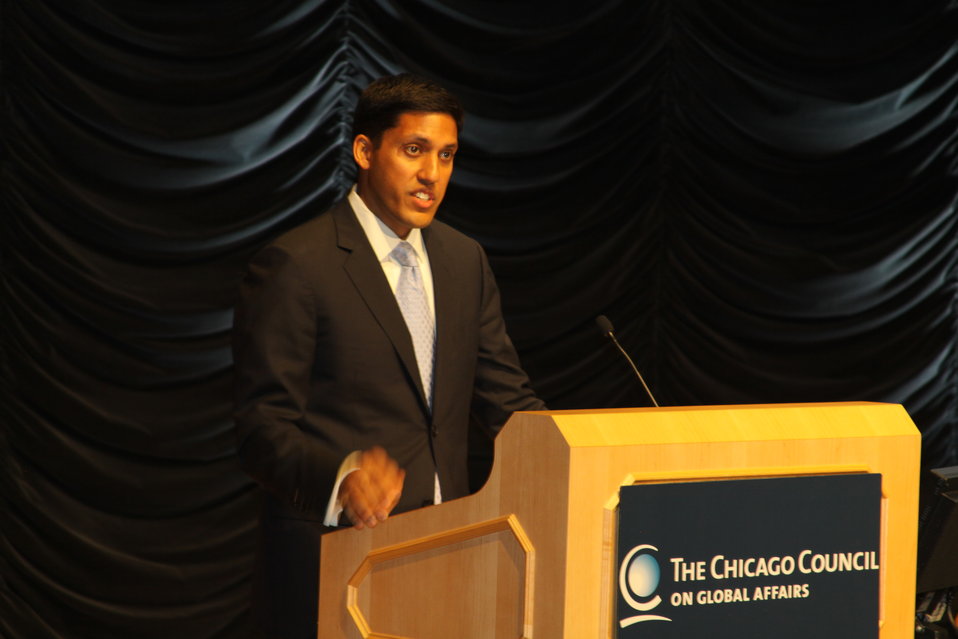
Administrator Shah Delivers Remarks on the True Yields of Food Security

USAID Administrator Rajiv Shah delivers remarks on the True Yields of Food Security, at the Chicago Council on Global Affairs' Symposium on Global Agriculture and Food Security in Washington, D.C., on May 24, 2011.